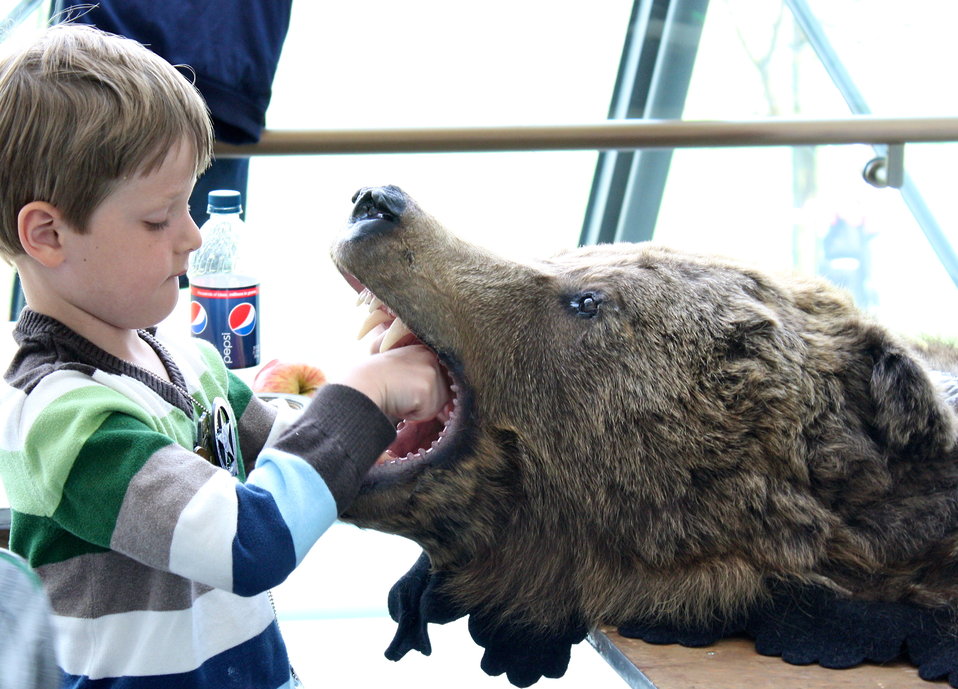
Boy and Bear Head